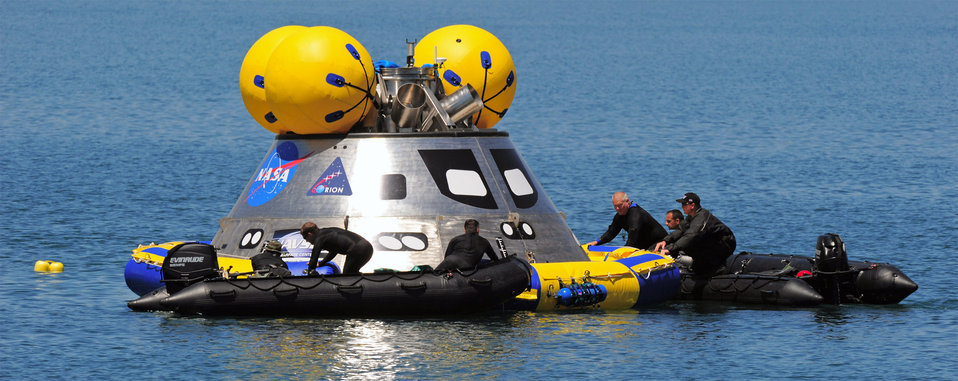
Pararescuemen conduct water test of new NASA capsule

Pararescuemen deploy an inflatable flotation collar during recovery testing on a mockup of the Orion crew exploration vehicle March 8 at the Trident Basin at Port Canaveral, Fla. The collar is designed both to stabilize the capsule after water landing and provide a platform for recovery personnel to stand on during the operation. Reservists from the Reserve's 920th Rescue Wing provide contingency medical and recovery support for all NASA shuttle launches.